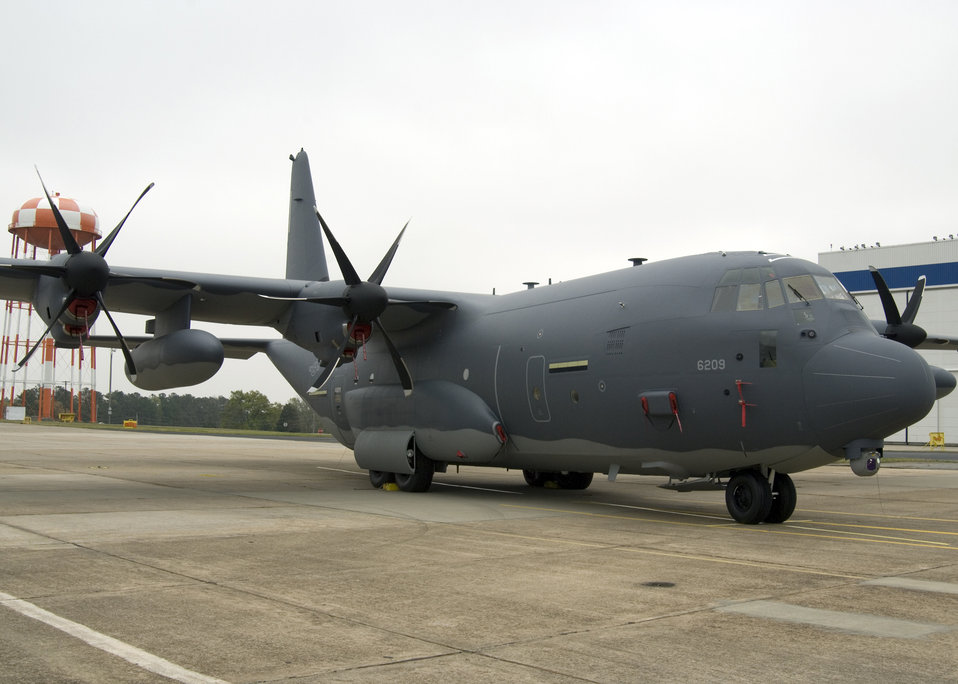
MC-130J rollout

The MC-130J Combat Shadow II, Air Force Special Operations Command's newest aircraft, sits on the tarmac after its unveiling March 29, 2011, at Lockheed Martin in Marietta, Ga.